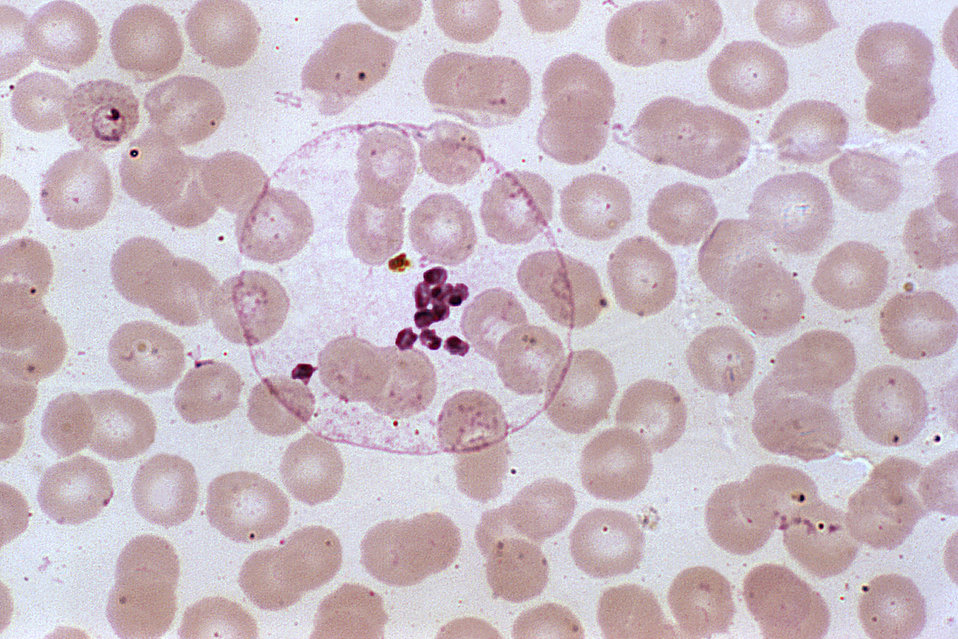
This micrograph depicts a mature Plasmodium ovale schizont containing separated merozoites; Mag. 1000X.